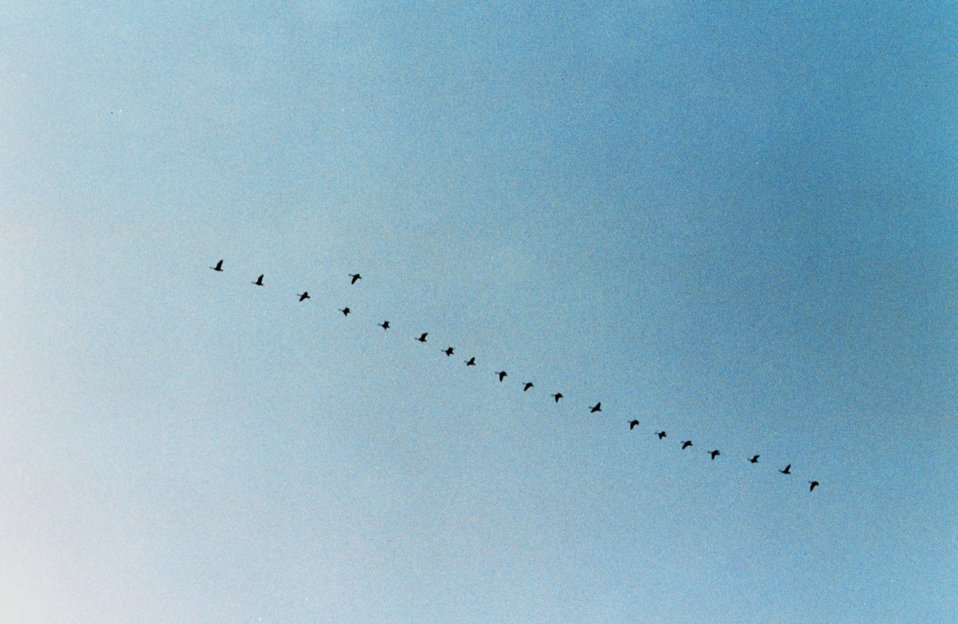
V-formation of Canada geese flying over the upper Patuxent River at dawn.